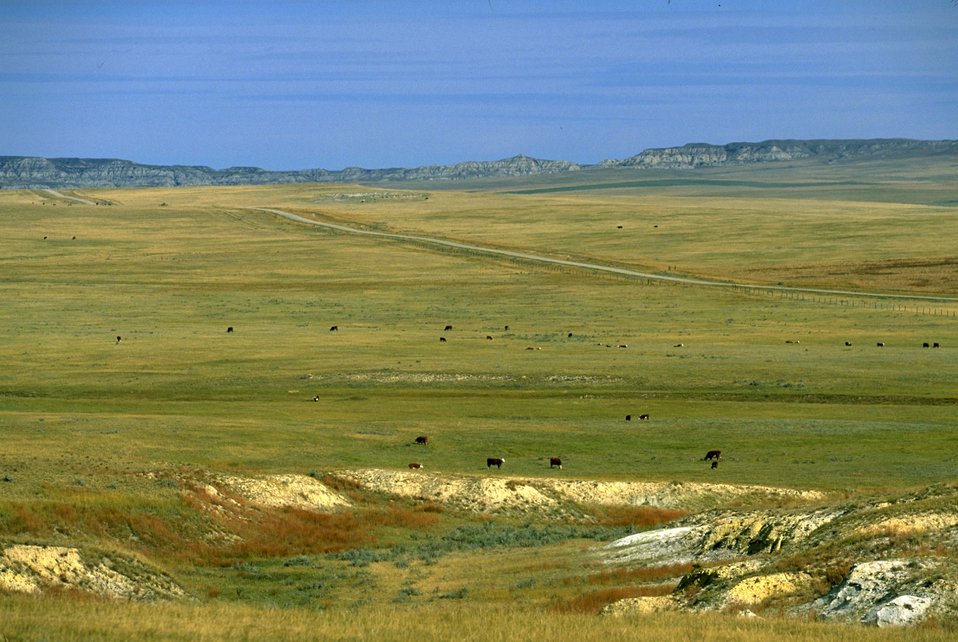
Cattle grazing in eastern Montana - Terry Badland in the background